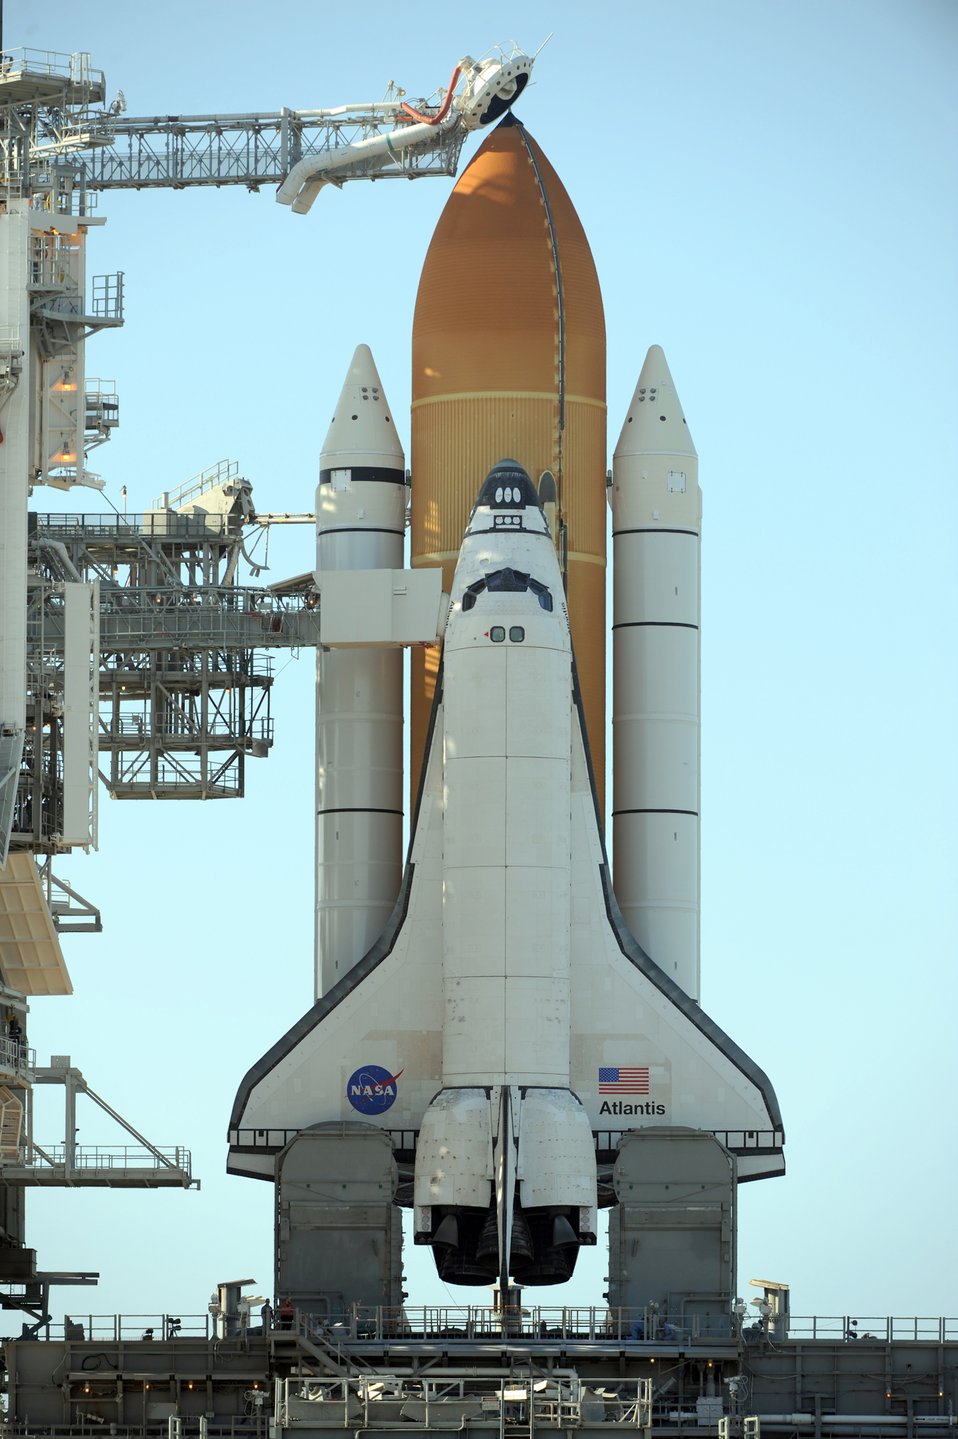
Space shuttle Atlantis

The space shuttle Atlantis is prepped by NASA personnel May 14, 2010, at the Kennedy Space Center in anticipation of its upcoming launch.